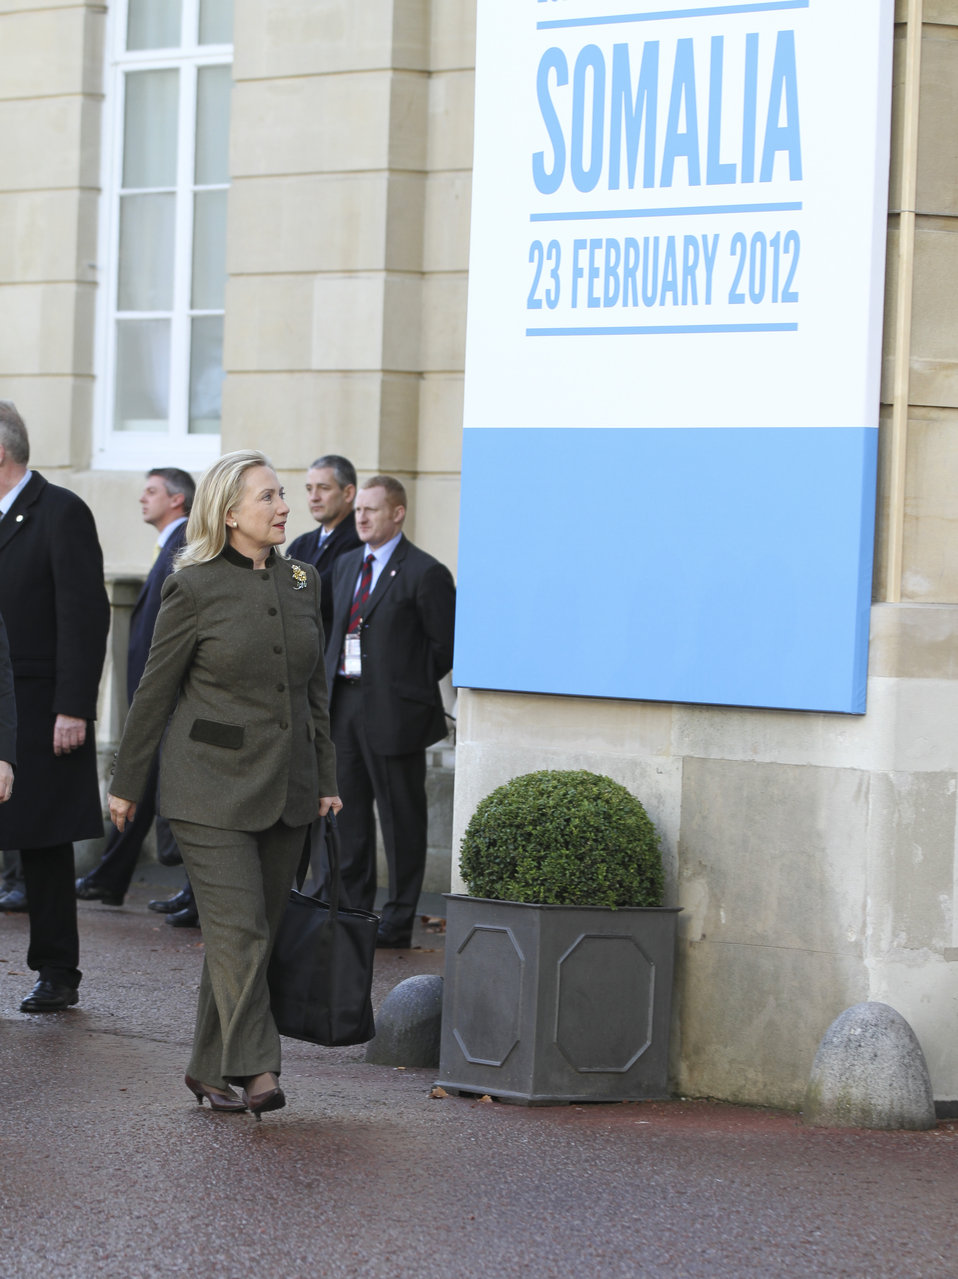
Secretary Clinton Enters the Lancaster House

U.S. Secretary of State Hillary Rodham Clinton enters the Lancaster House to participate in the London Conference on Somalia, hosted by UK Prime Minister David Cameron, on February 23, 2012.